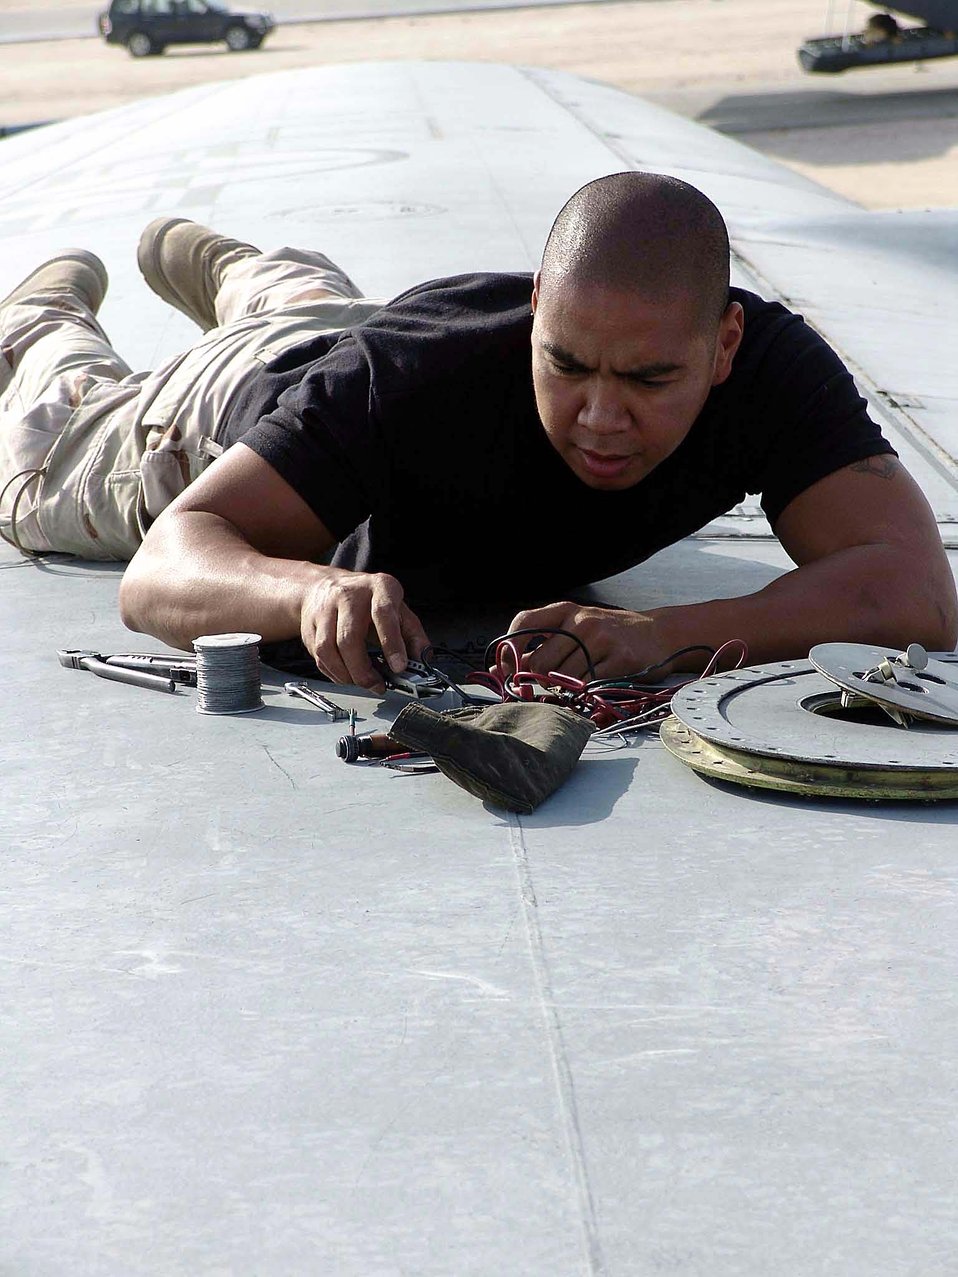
Gettin' ready

SOUTHWEST ASIA -- Airman 1st Class Rommel Novico works on the wiring for a C-130 Hercules on Oct. 18 as the aircraft is prepared for a mission into Iraq. He is assigned to the 746th Expeditionary Maintenance Squadron at a forward-deployed location and is from Ramstein Air Base, Germany.